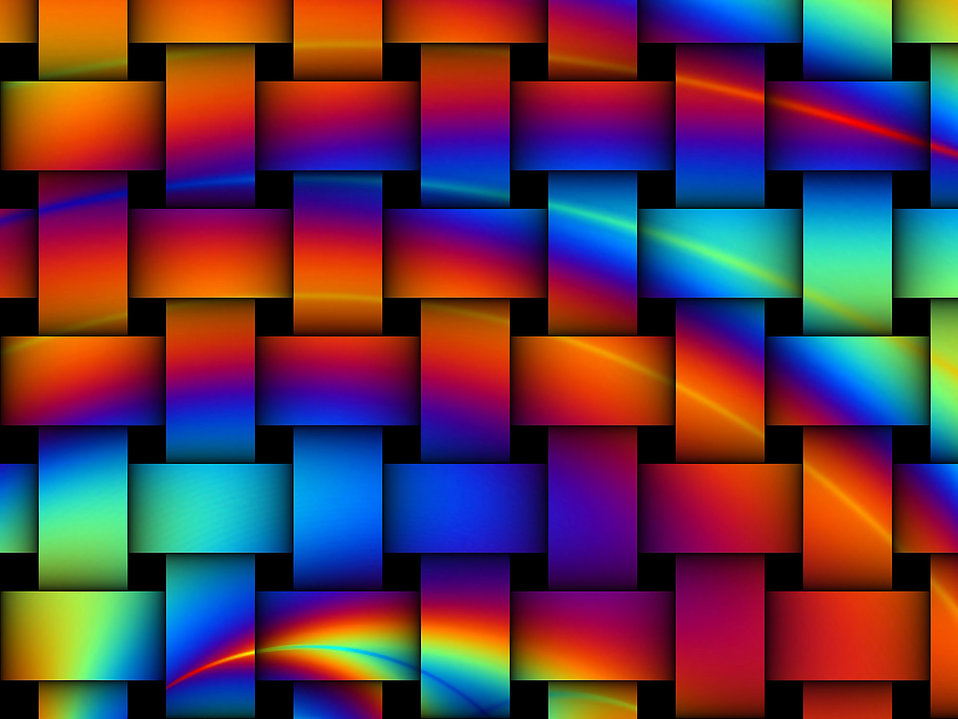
Rainbow weaving pattern

Background.